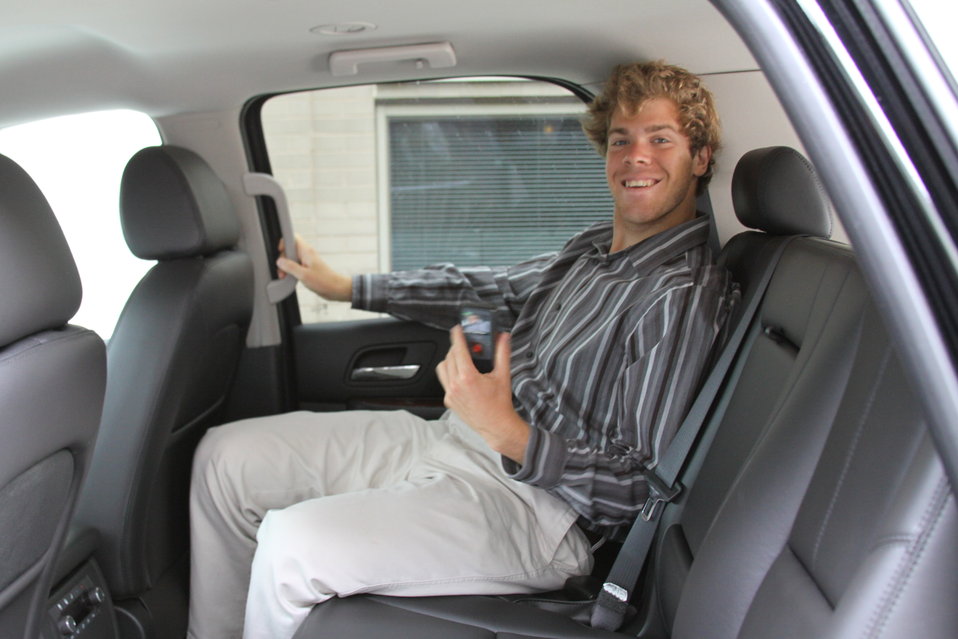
Tahoes 019